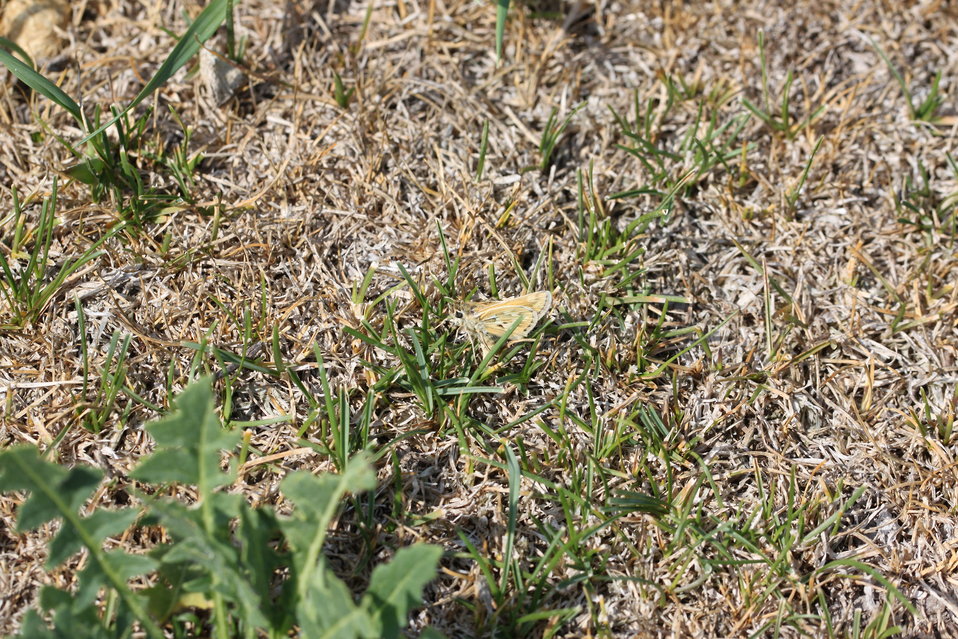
Sandhill Skipper

Polites sabuleti in grass (laying eggs?) near Refuge Amphitheater; on eastern edge of distribution here.